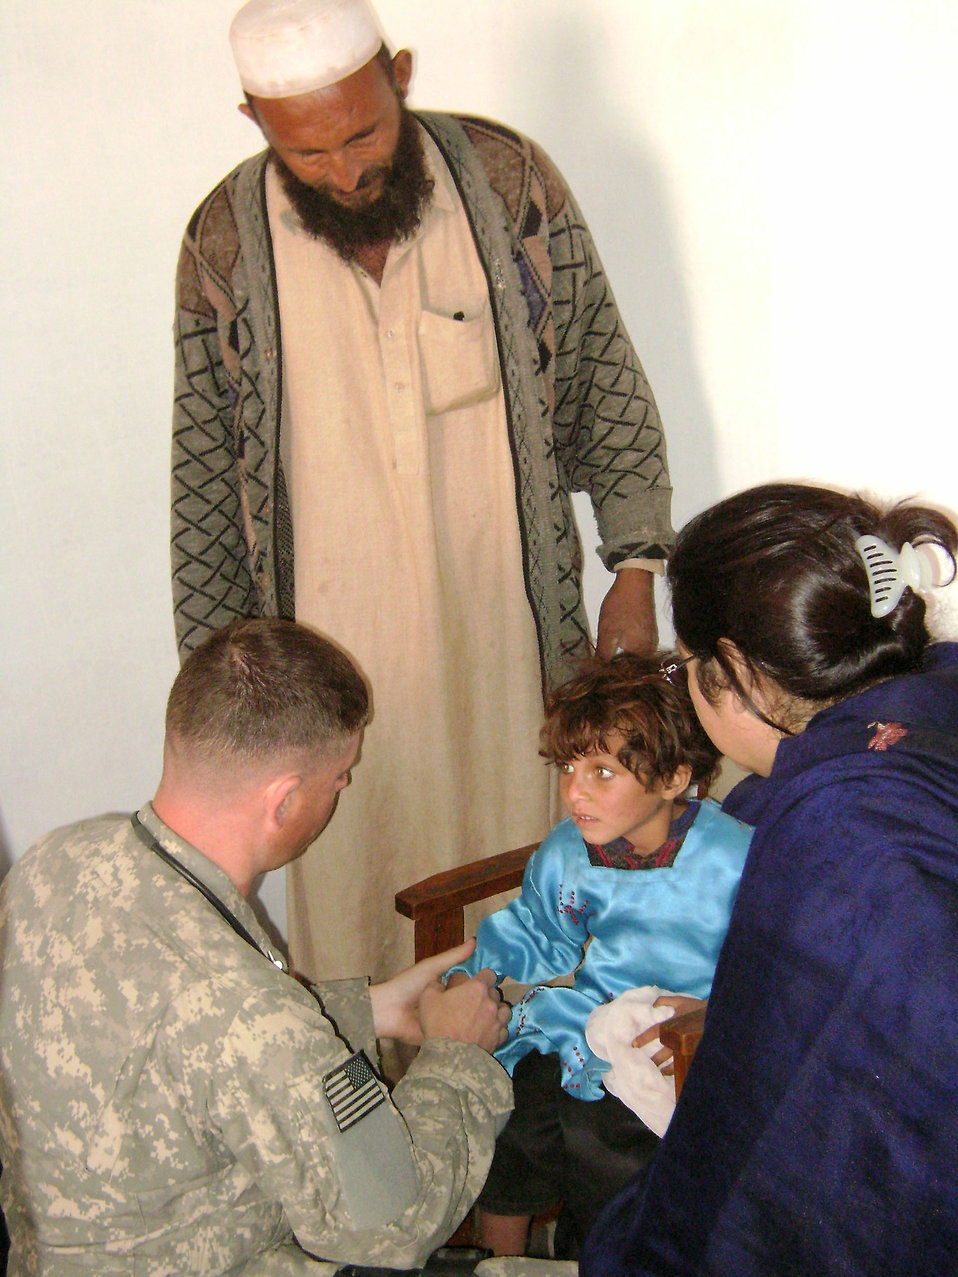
Servicemembers provide medical care to 120 Afghans

Technical Sgt. Kyle Baker examines an injured girl at the Hope of Mother Clinic Feb. 24 in the Surkh Rod District of Afghanistan. Sergeant Baker is a medic with the provincial reconstruction team in Afghanistan's Nangarhar province.